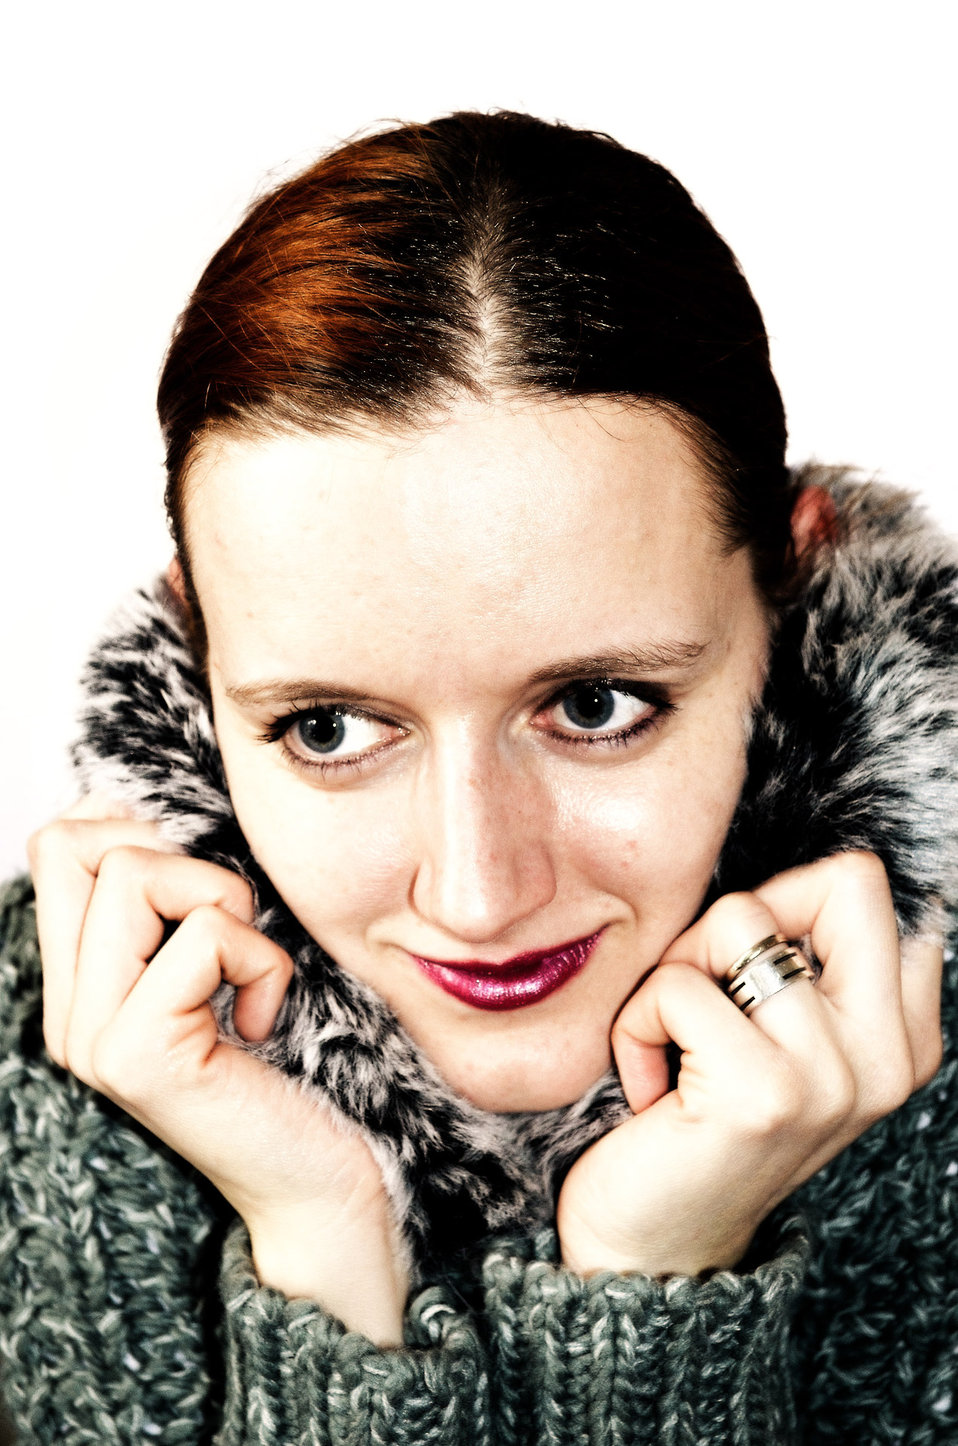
Woman and fashion.